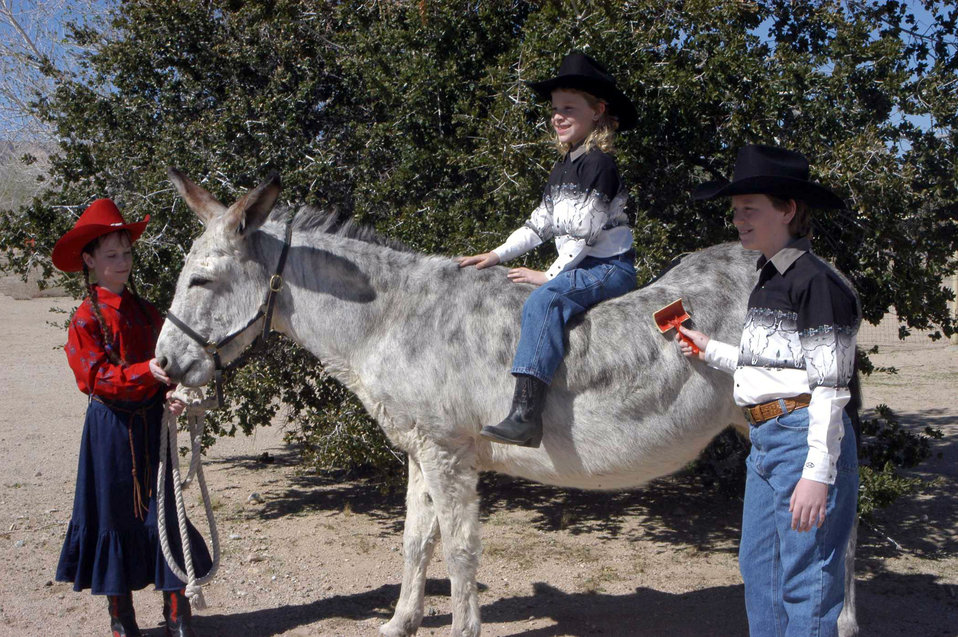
A donkey's story

EDWARDS AIR FORCE BASE, Calif. - Scarlett, 9, (left) feeds Sweet Pea while Myles, 11, (right) takes care of grooming with Preston, 7, atop the donkey. Sweet Pea is the character behind the children's newly published book. They are currently working on their second book about Sweet Pea.